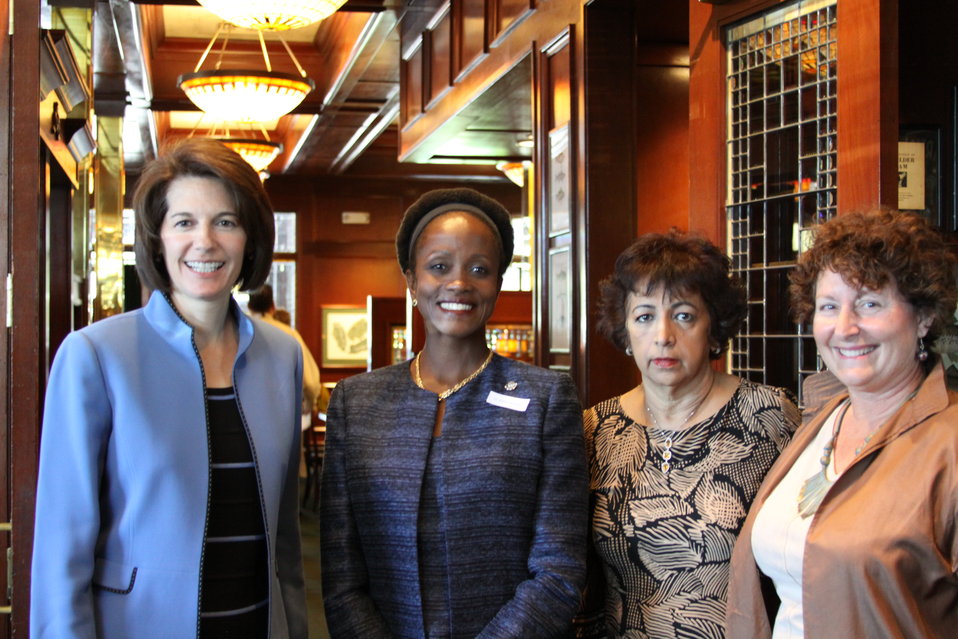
Assistant Secretary Brimmer Poses for a Photo at a Lunch Meeting Discussion on U.S. Multilateral Engagement

From left to right, Catherine Cortez Masto, State Attorney General Nevada States Attorney General ; Dr. Esther Brimmer, Assistant Secretary for International Organization Affairs; Rita Vaswani, President American Indian Chamber of Commerce of Nevada; and Annette Whiteside, President of the World Affairs Council of Las Vegas pose for a photo at a lunch meeting discussion on U.S. multilateral engagement in Las Vegas, Nevada, on September 1, 2011.